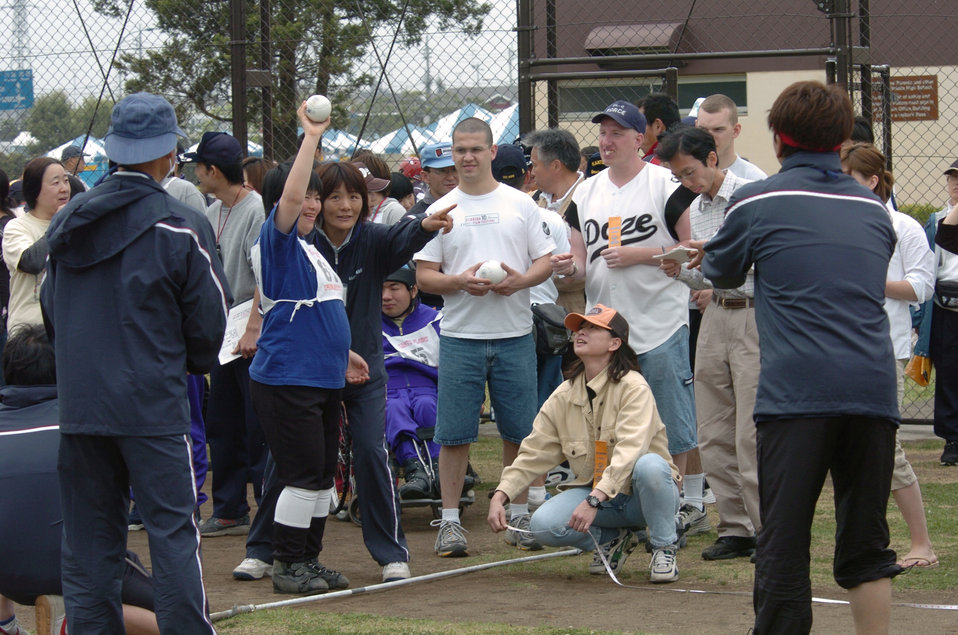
Special Olympics brings joy to Yokota volunteers

YOKOTA AIR BASE, Japan -- A crowd gathers during a softball throw event at the 26th Annual Kanto Plain Special Olympics here. More than 400 athletes from 20 Japanese schools competed in the two-day event May 7 and 8, which included basketball, swimming, softball throw, bowling, and track and field.